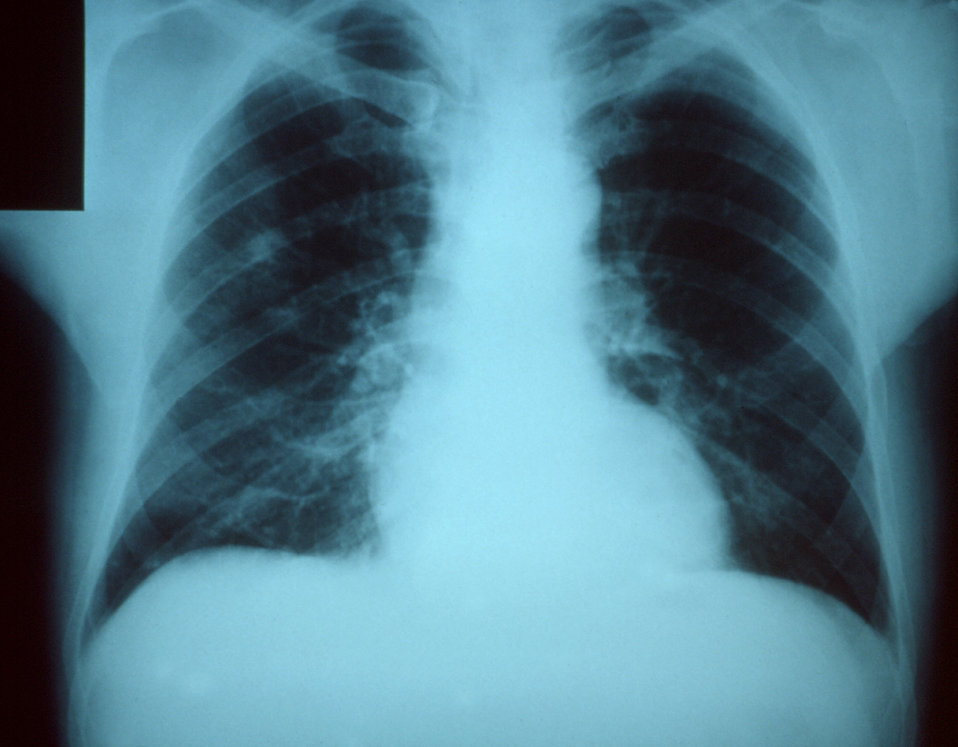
This anteroposterior chest x-ray revealed right upper lobe pneumonia the etiology of which was unknown.